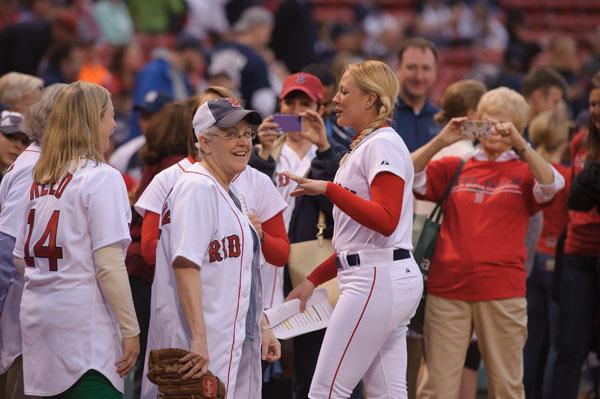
Day in the Life - Earth Day, April 22, 2014

6:47 pm – Taking in the huge crowd on hand for the Red Sox vs Yankees game, McCarthy prepares for her first pitch in recognition of Earth Day. (9/12)